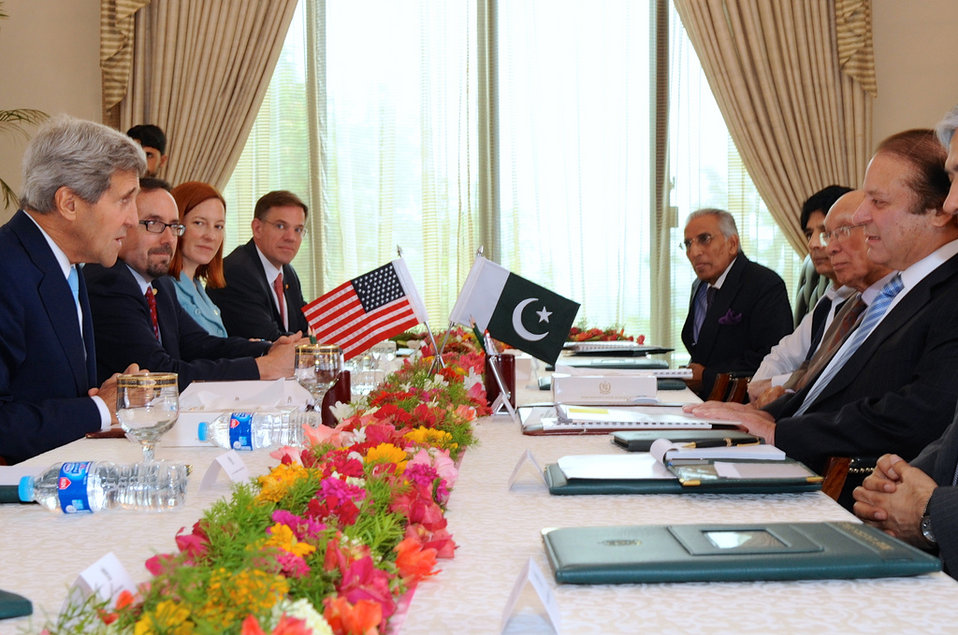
Secretary Kerry Meets With Pakistani Prime Minister Sharif

U.S Secretary of State John Kerry and Pakistani Prime Minister Nawaz Sharif chat over a flower-filled table before a meeting with their respective staffs in Islamabad, Pakistan, on August 1, 2013.